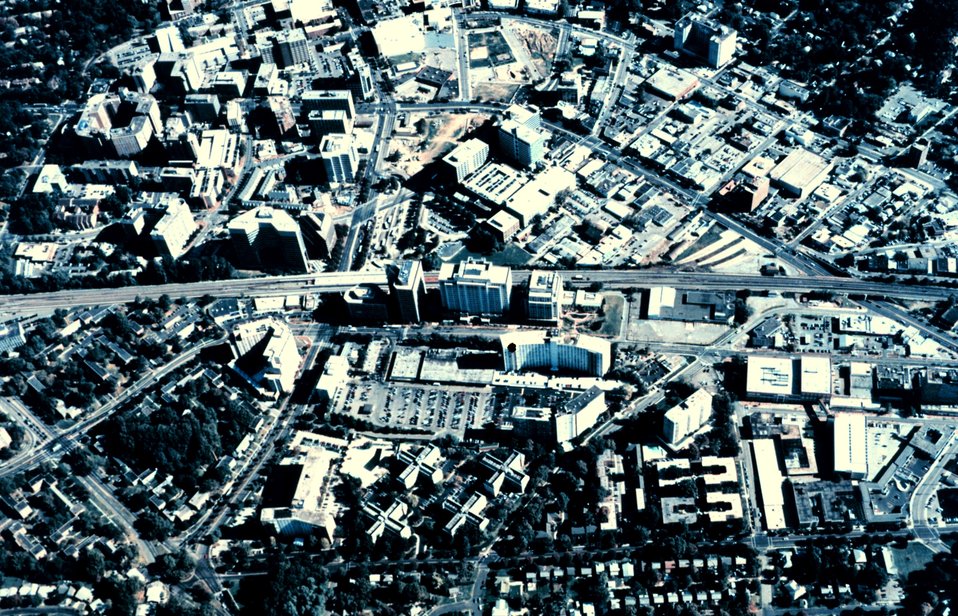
NOAA Headquarters in Silver Spring, Maryland. The NOAA Central Library is in the large rectangular building in the center of the photograph.